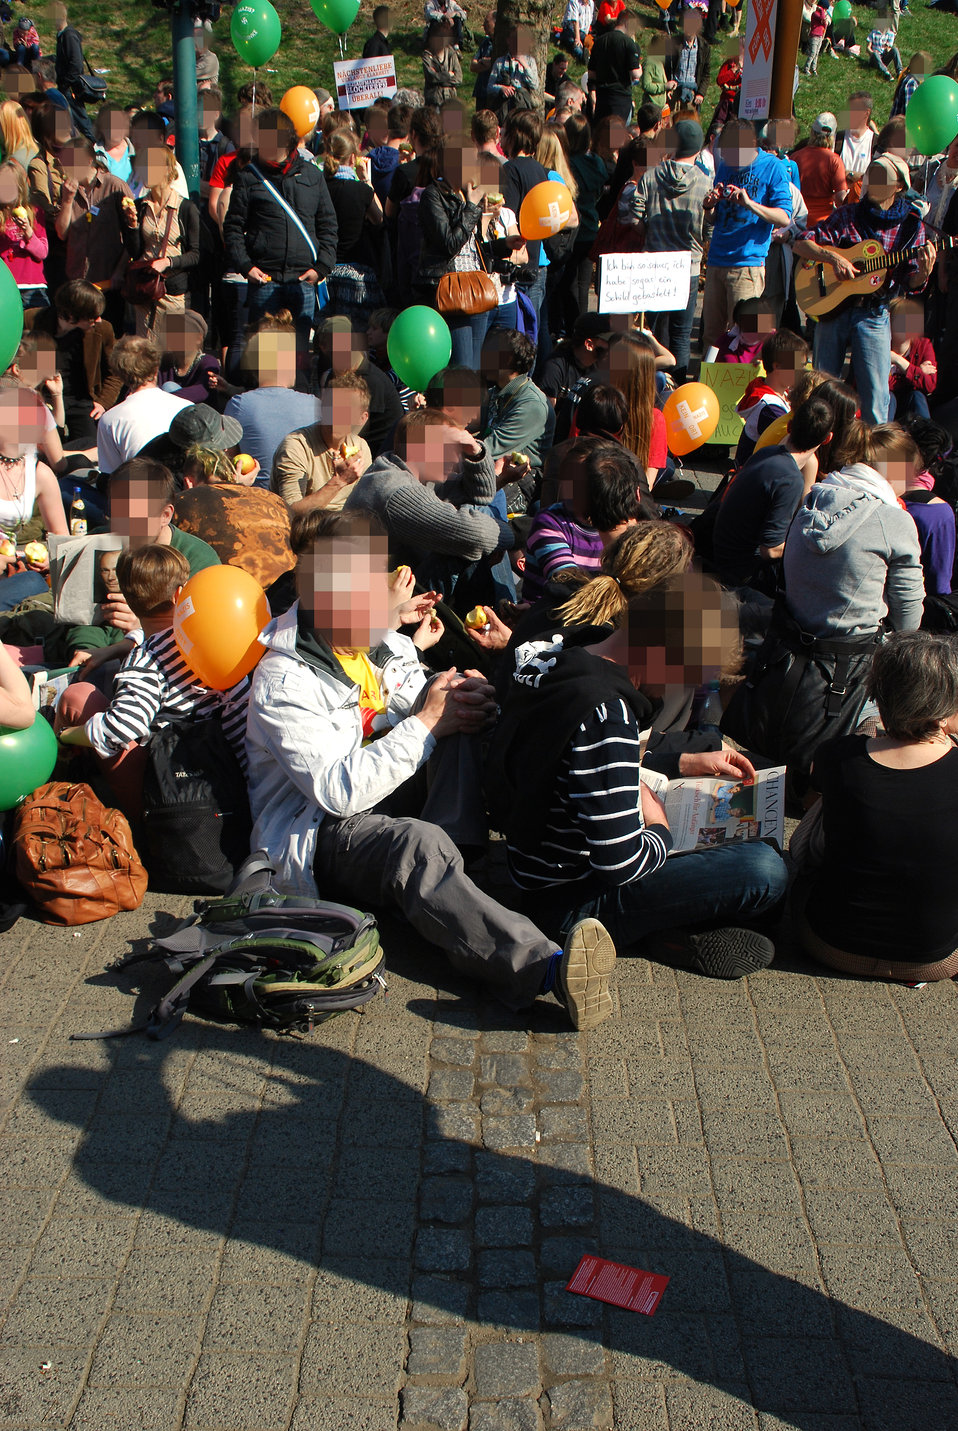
Proteste gegen den Nazi-Aufmarsch am 24.3.2012 in Frankfurt (Oder)